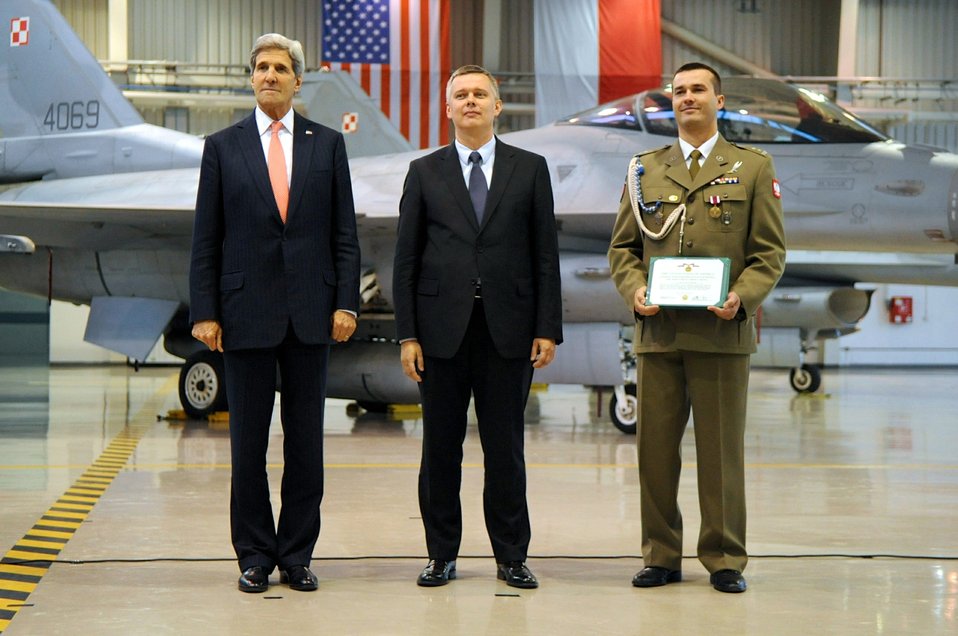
Secretary Kerry, Polish Defense Minister Siemoniak Recognize Polish Lieutenant Colonel Bagan

U.S. Secretary of State John Kerry and Polish Defense Minister Tomasz Siemoniak stand with Lieutenant Colonel Wojciech Bagan after the Polish Special Forces member was recognized by the U.S. for valor in Afghanistan during a ceremony at the Lask Military Airbase in Poland on November 5, 2013.